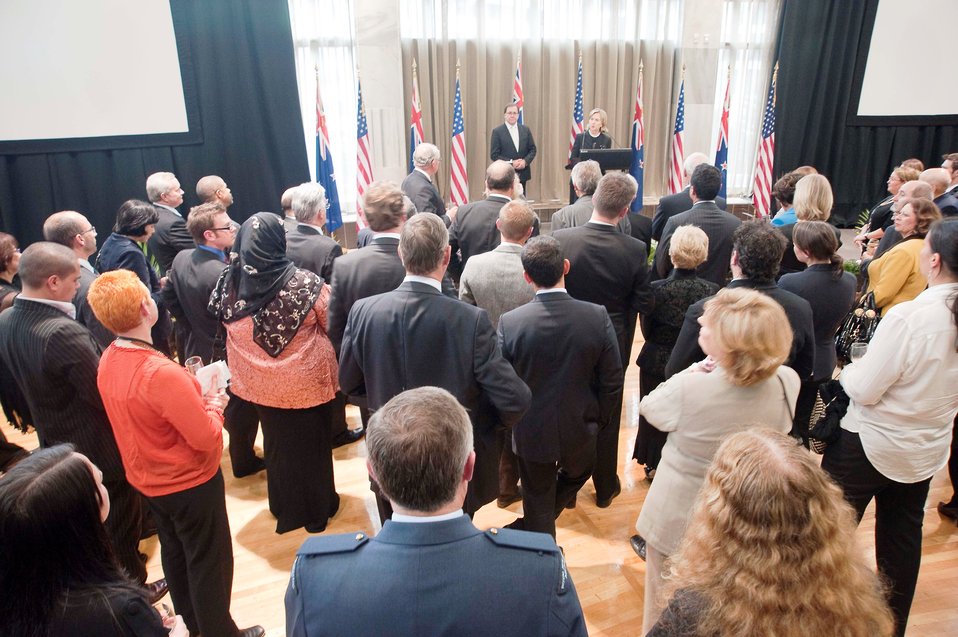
Secretary Clinton Speaks During a Reception Hosted By New Zealand Minister Foreign Minister McCully

U.S. Secretary of State Hillary Rodham Clinton speaks during a reception hosted by New Zealand Foreign Minister Murray MCully in Wellington, New Zealand, on November 4, 2010.